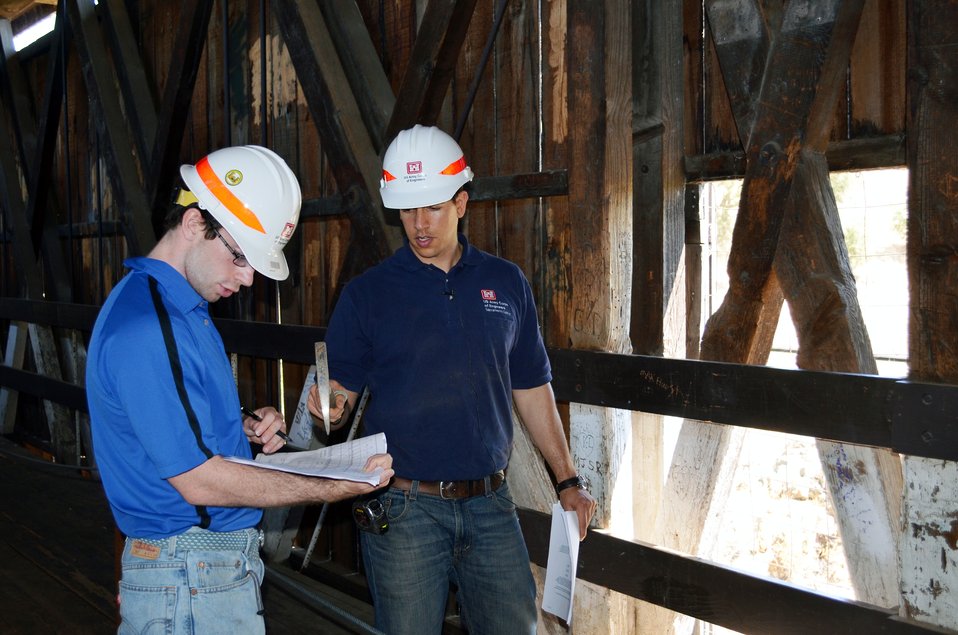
Corps to restore historic Knights Ferry Covered Bridge

(From left) Chris Bayliss and Christopher Abela, engineers with the U.S. Army Corps of Engineers Sacramento District, inspect the Knights Ferry Covered Bridge July 2, 2012 at Stanislaus River Parks near Oakdale, Calif. Engineers are working on a design to fix minor structural issues with the bridge, which was approved for inclusion as a historic landmark in the Library of Congress.